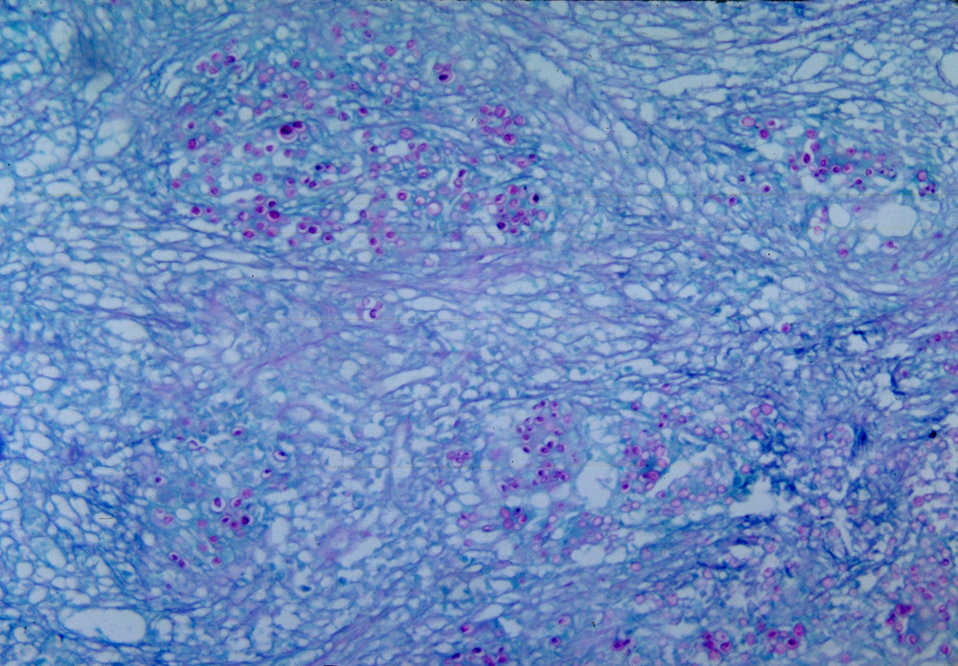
This micrograph depicts the histopathologic changes in the spleen due to H. duboisii, using PAS staining technique.